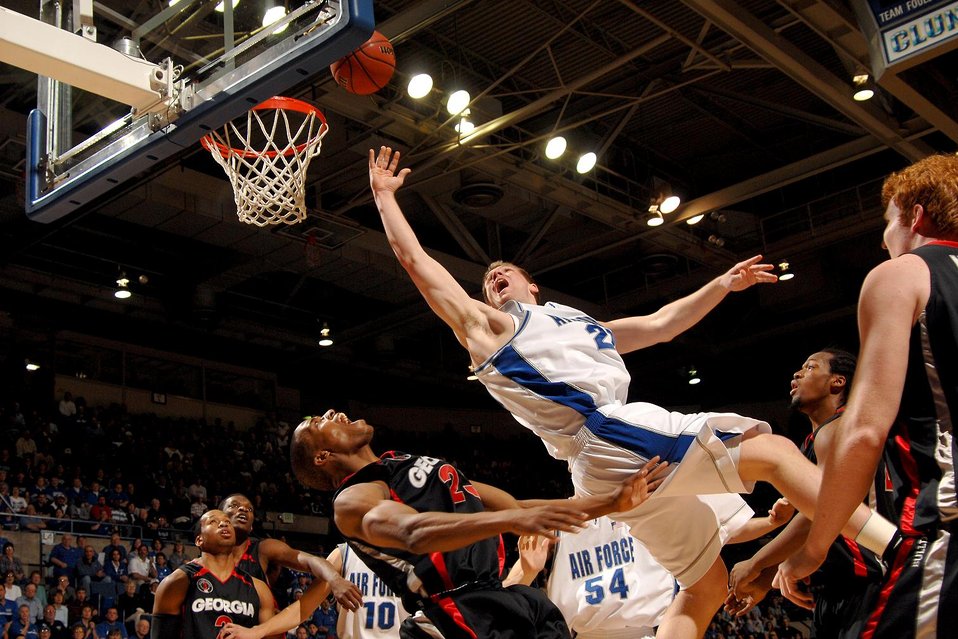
Falcon forwards march over Georgia in NIT

Air Force forward Jacob Burtschi takes to the air over Georgia guard Corey Butler March 19 in the second round of the National Invitation Tournament at the Air Force Academy's Clune Arena. Burtschi led the Falcons with 21 points, as Air Force went on to win, 83-52. Air Force set a school record for wins in a season with their 25th win.